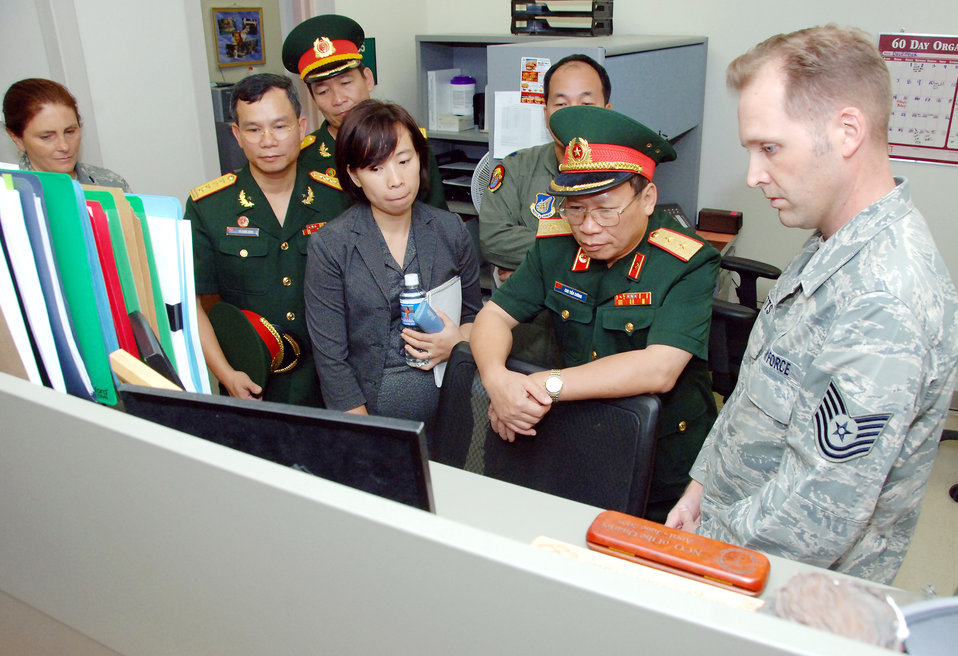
Vietnam military health, logistics reps visit Hickam

Tech. Sgt. Brian Watts explains to Lt. Gen. Chu, Tien Cuong, director of the Vietnam Military Medical Department, how the U.S. Air Force uses a database to track individual medical readiness during the general's visit to Hickam Air Force Base, Hawaii, Nov. 10, 2009. Six delegates from the Vietnam military health and general logistics fields met with U.S. Air Force officials at Hickam during a 13th Air Force-hosted visit. The delegates learned how the U.S. military conducts surveillance, screening and testing of infectious diseases, and how the U.S. Air Force plans and conducts logistics operations. Sergeant Watts is a public health craftsman in the 15th Aeromedical Dental Squadron.